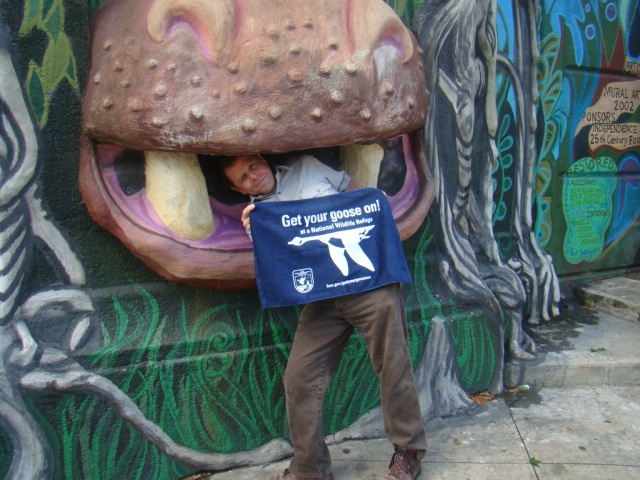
Get Your Goose On!

Refuge Manager Gary Stolz Gets His Goose On at the Philadelphia Zoo.